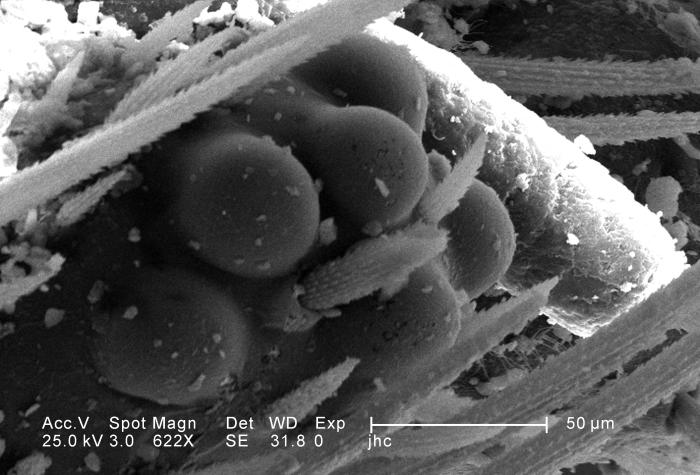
Under a magnification of 622X, this scanning electron micrograph (SEM) depicted some of the ultrastructural morphology displayed on the head region of a larval antlion, surrounding the region of its right compound eye. This larva is sometimes referred to as a 'doodlebug', because of the trails it leaves in the soft sand as it hunts for prey. This arthropod, i.e., jointed legs, undergoes dramatic morphologic changes when it metamorphoses into a beautiful flying antlion lacewing. Note the particulate debris dispersed over the exoskeletal surface, which represents sand, and other constituents of the antlion's natural environment. See PHIL 11812 through 11817 for additional views of the eye under successively greater madnifications.